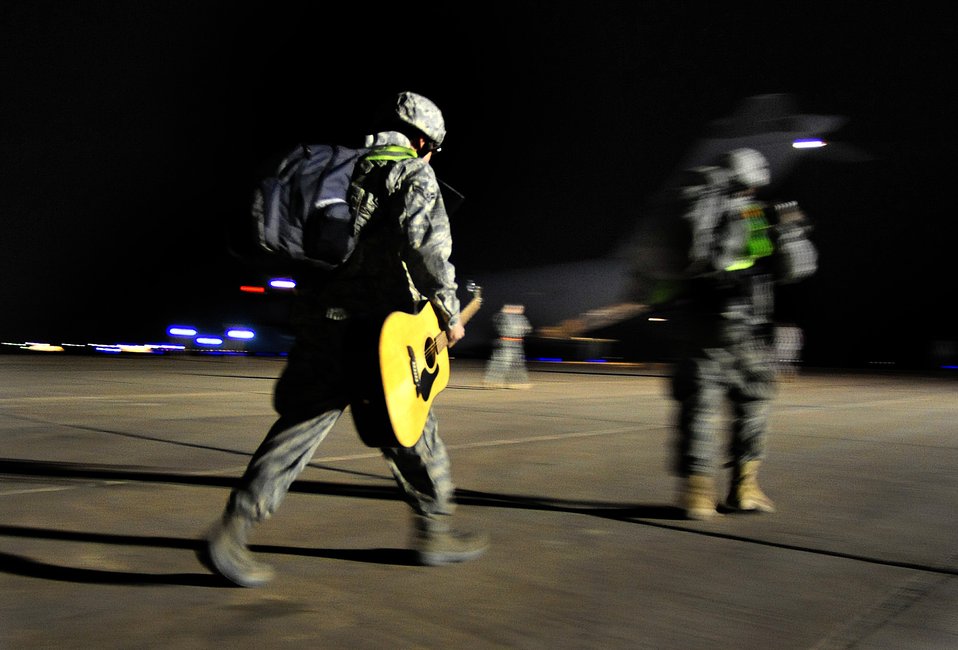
Last Airmen flying out of Iraq

Airman 1st Class Simeon Tidwell walks across the flightline to board a C-17 Globemaster III Dec. 18,2011, at Ali Air Base, Iraq. He is one of the last Airmen to redeploy from Iraq. He is assigned to the 407th Air Expeditionary Group.